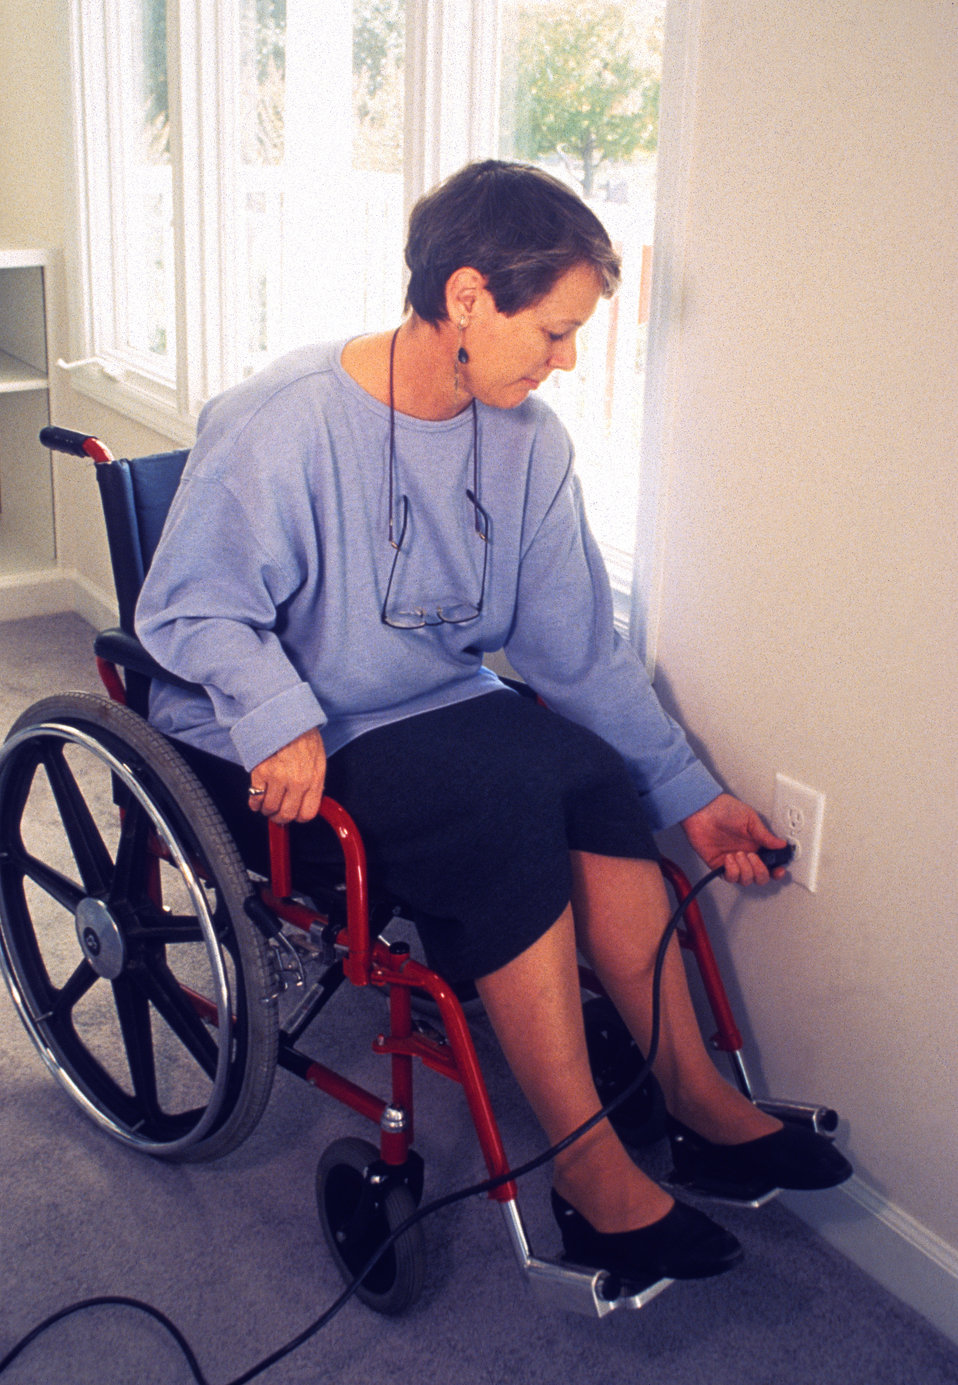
This 1997 image showed that by mounting an electrical outlet no lower than fifteen inches above floor level, a wheelchair-seated woman could easily insert, or extract an electrical plug without having to maintain an uncomfortable body position. Also, installing the outlet lower than the suggested 15in. would prove difficult to access for those with mobility impairments that hinder them from accomplishing the bending motion. This woman seated in her wheelchair, easily accessed the electrical outlet without difficulty.